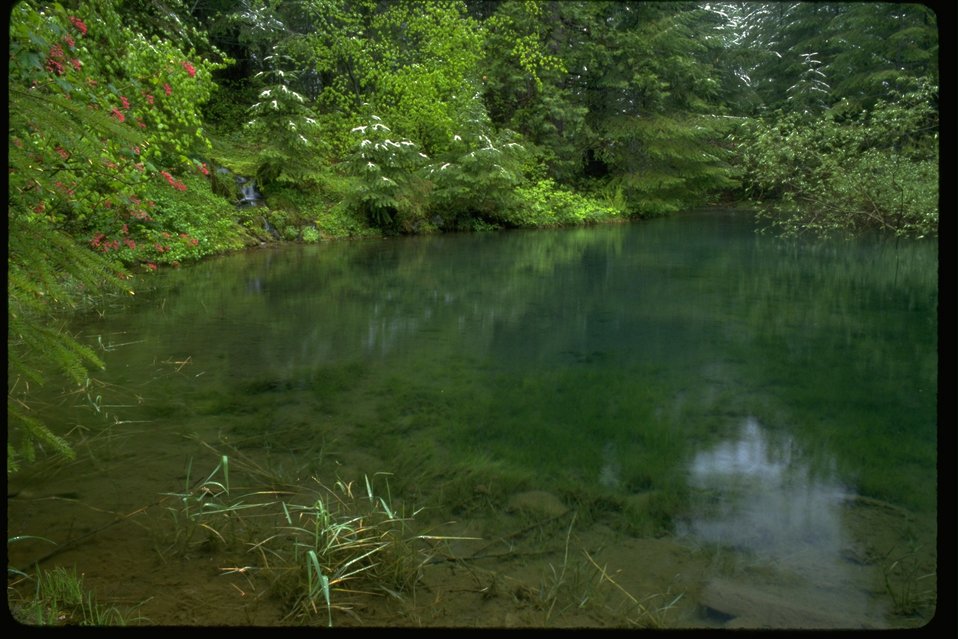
Pond in the Red Rock drainage from Lost Creek.